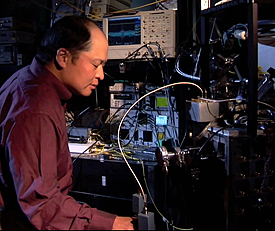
Photon Detector

NIST engineer Sae Woo Nam works with refrigeration equipment used to cool photon detectors to nearly absolute zero. His team's efforts have created devices that can detect single photons with 99 percent accuracy.